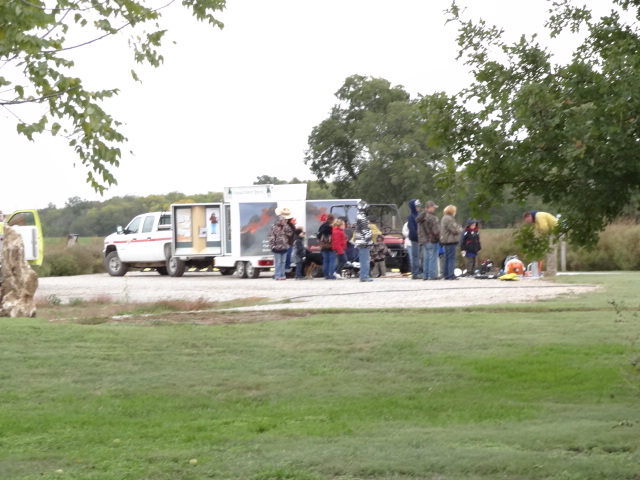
Wildland Fire Demonstrations